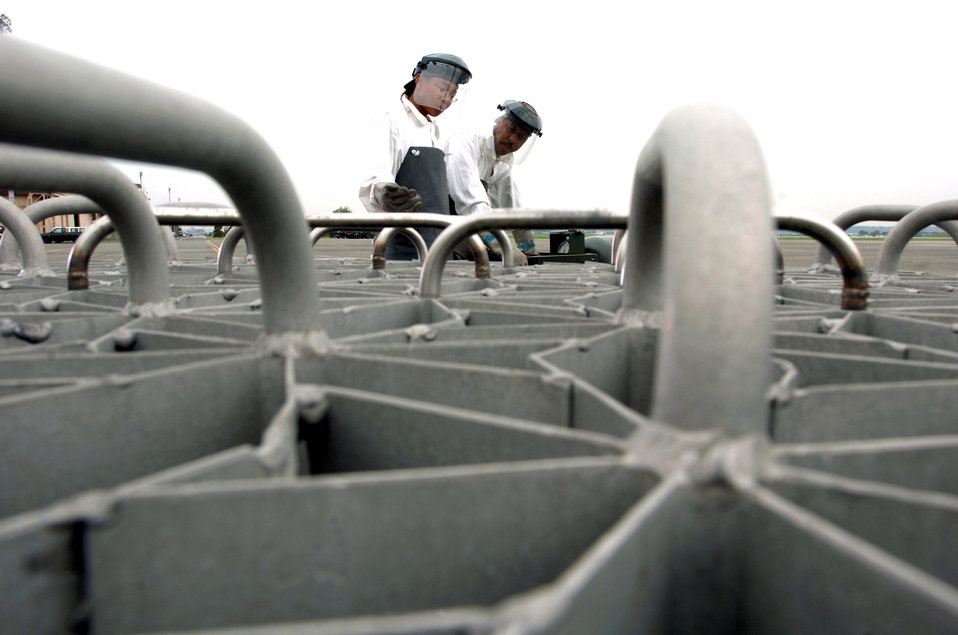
A draining task

YOKOTA AIR BASE, Japan -- Airman 1st Class Andrea Jones (left) and Senior Airman Garry King do an annual check of a heat exchanger. The exchanger helps drain liquid oxygen carts faster. Technicians with the 374th Maintenance Squadron here inspect, calibrate, repair and maintain the cryogenic/compressed gas units.